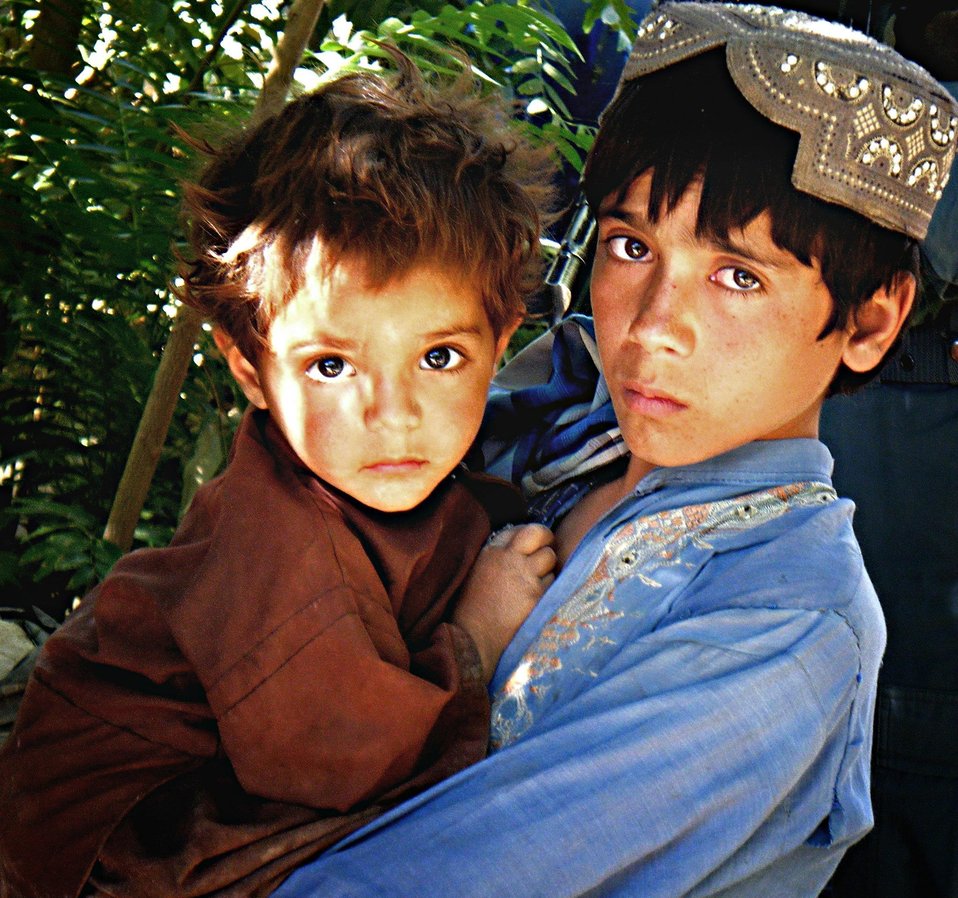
Airman returns to Afghanistan as mentor

Afghan brothers wait for their father to come out of a community meeting in Afghanistan’s Zabul province.